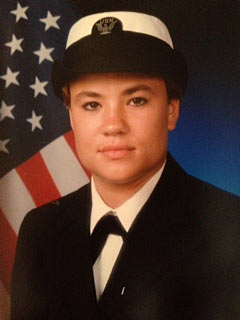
Shawna Dingmann-Midwest Region

Shawna Dingmann, who spent time in the Navy, is now an Accountant in the Midwest Region’s Department of Budget and Finance.